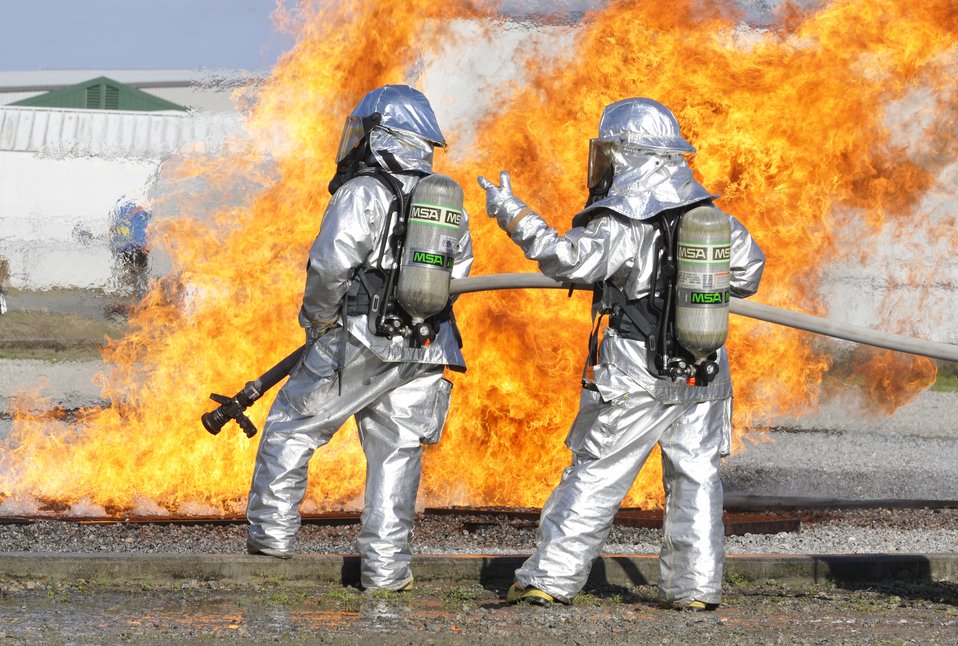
Crews train to fight fire

Firefighters from the 125th Fighter Wing at Jacksonville, Fla., and 71st Fighter Wing at Langley Air Force Base, Va, discuss options while training at an aircraft fire simulation at the Combat Readiness Training Center in Savannah, Ga., March 13, 2010. The burn pit is a live fire training simulator.